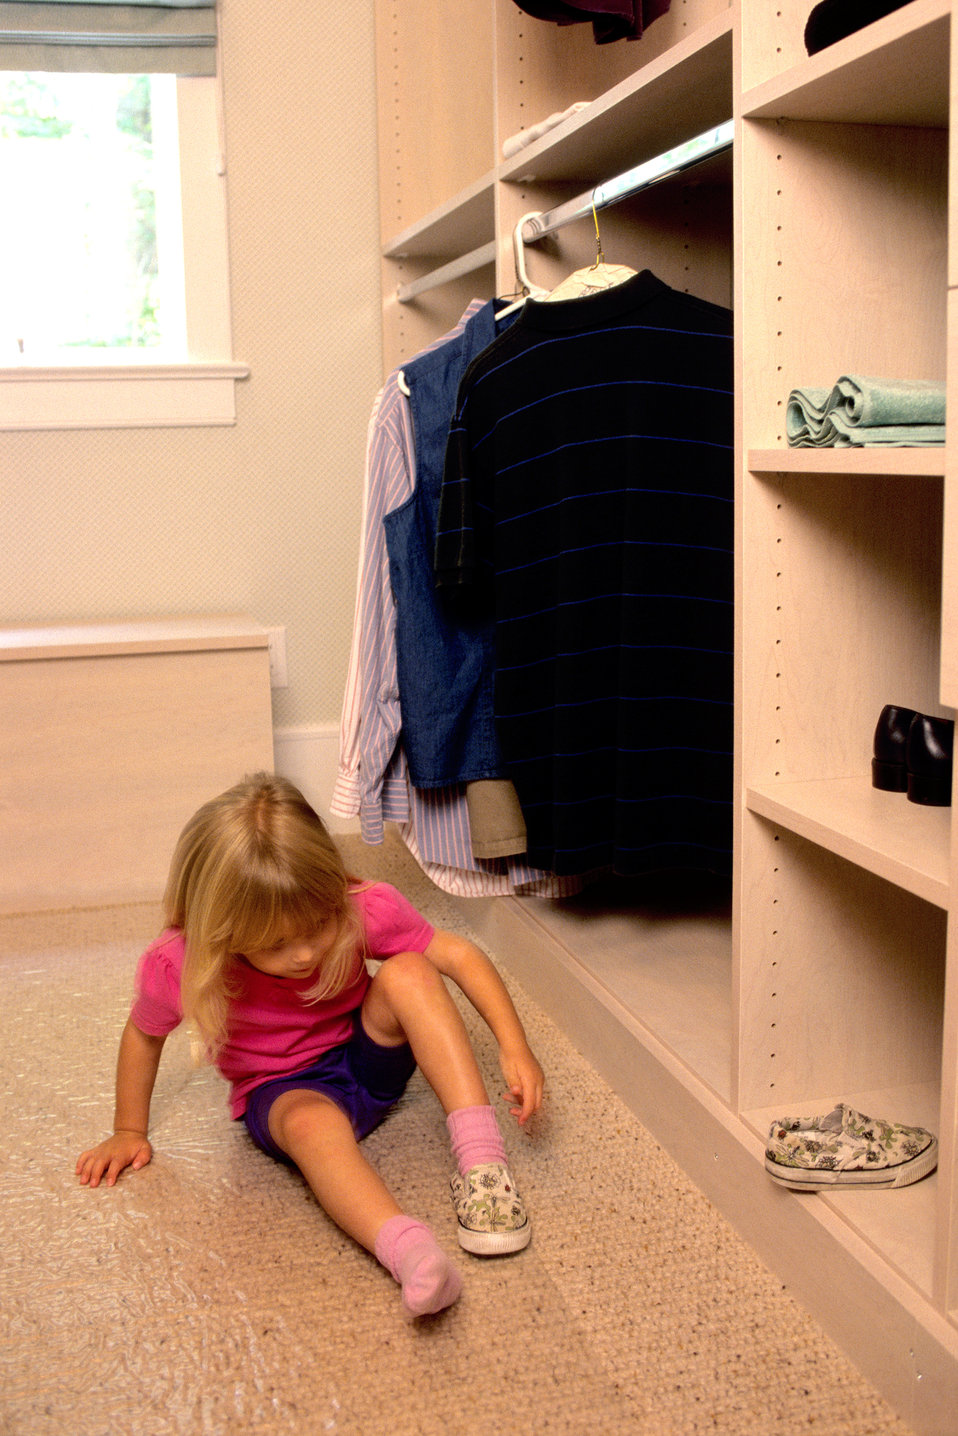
The young girl depicted in this 2000 image was shown putting on, or taking off her sneakers, while she was seated on the carpeted floor of a walk-in closet. The closet was designed to facilitate usage by people who had trouble reaching, were seated in a mobility device, or were of short stature. Demonstrated here was one of the benefits enjoyed by children, and showed how widespread are the concepts of universal design.The Center for Universal Design (CUD) is a national research, information, and technical assistance center that evaluates, develops, and promotes accessible and universal design in housing, buildings, outdoor and urban environments and related products. The Center's work manifests the belief that all new environments and products, to the greatest extent possible, should be usable by everyone regardless of their age, ability, or circumstance.